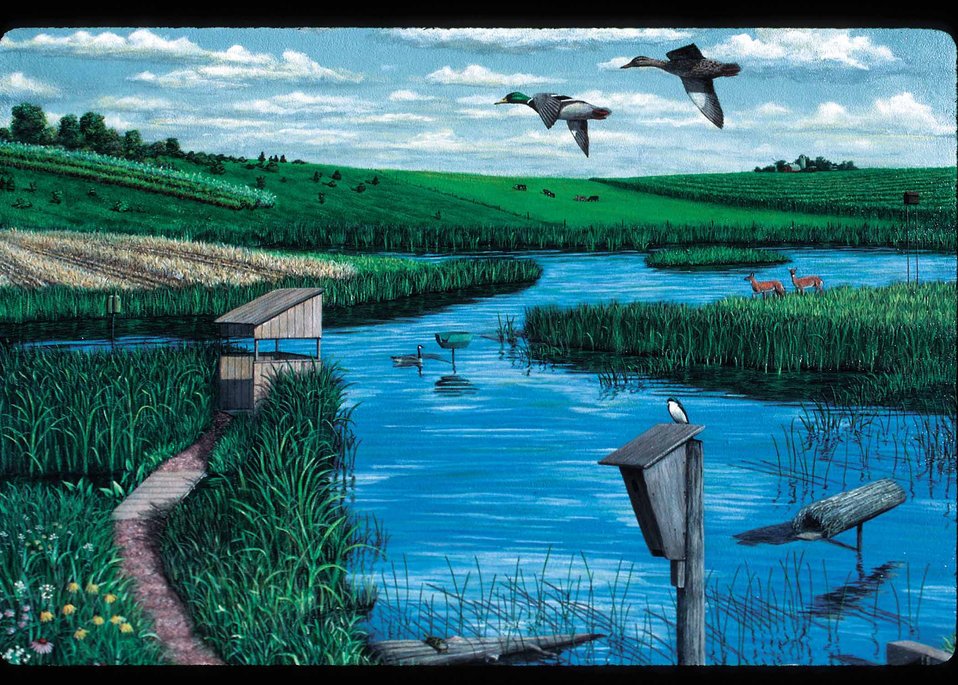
Artist depiction of numerous improvements that can be made to restored wetlands to enhance the wetlands for benefits to wildlife.